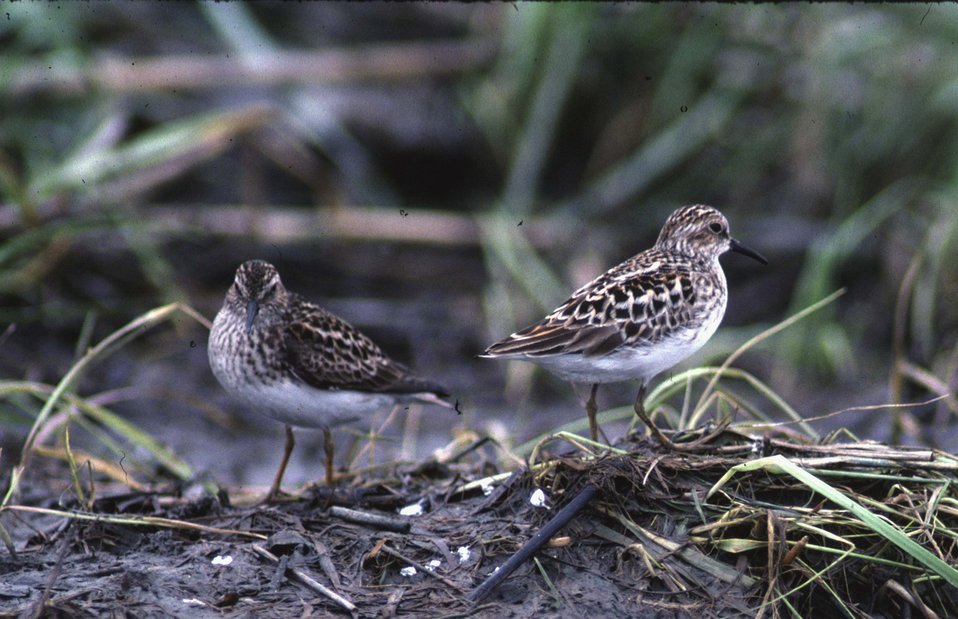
Least Sandpipers

Pt. Mahon, DE.